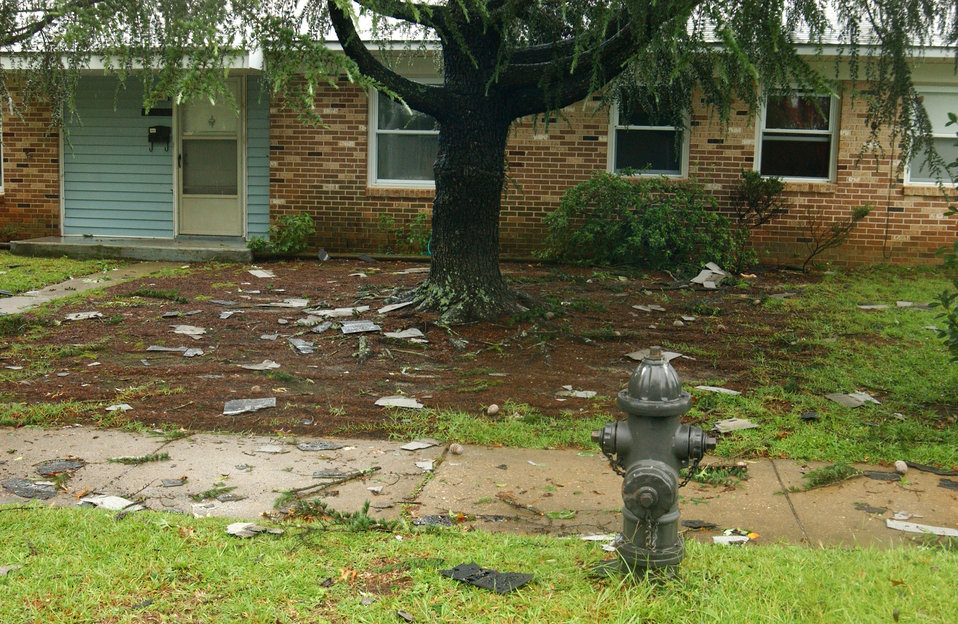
Tornado blows through Shaw

SHAW AIR FORCE BASE, S.C. -- A tornado with winds at about 103 mph damaged homes, power lines, trees and vehicles here Sept. 7. Multiple tornados stemming from Hurricane Frances touched down throughout the state. No one on base was injured.